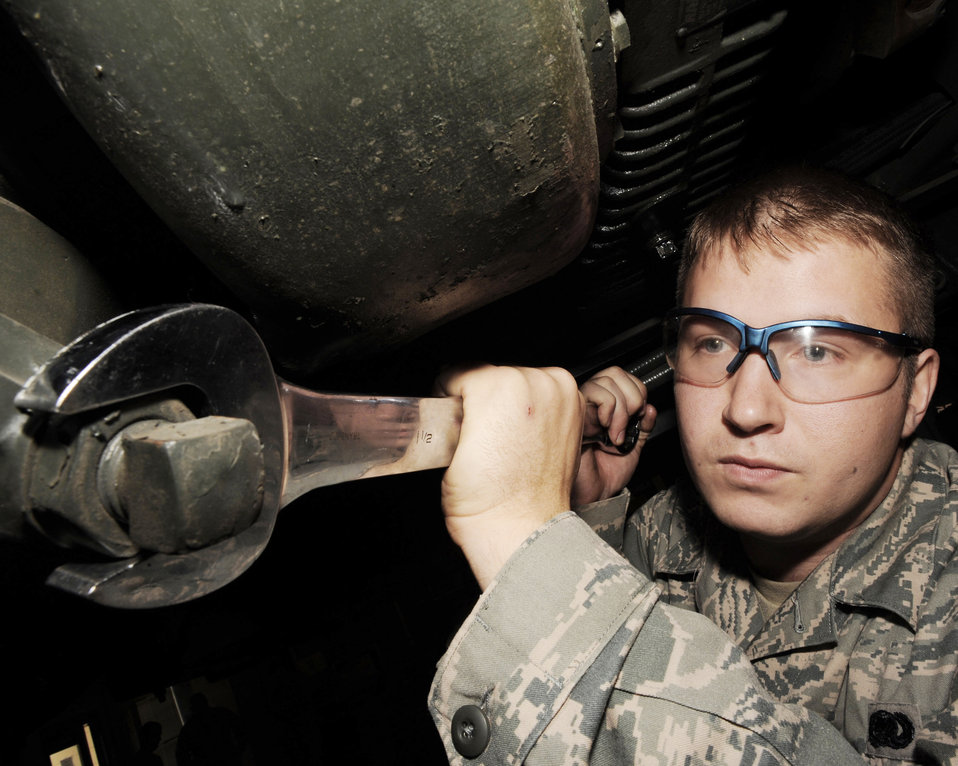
Clean fuel

Senior Airman Ricky Lose prepares to check the Y strainer on an R-11 refueling truck Oct. 21, 2009, during a six-month scheduled service inspection at Little Rock Air Force Base, Ark. The large trucks can hold up to 6,000 gallons of fuel and are used primarily to refuel the C-130 Hercules fleet at the base. Airman Lose is a refueling maintenance journeyman with the 19th Logistics Readiness Squadron.